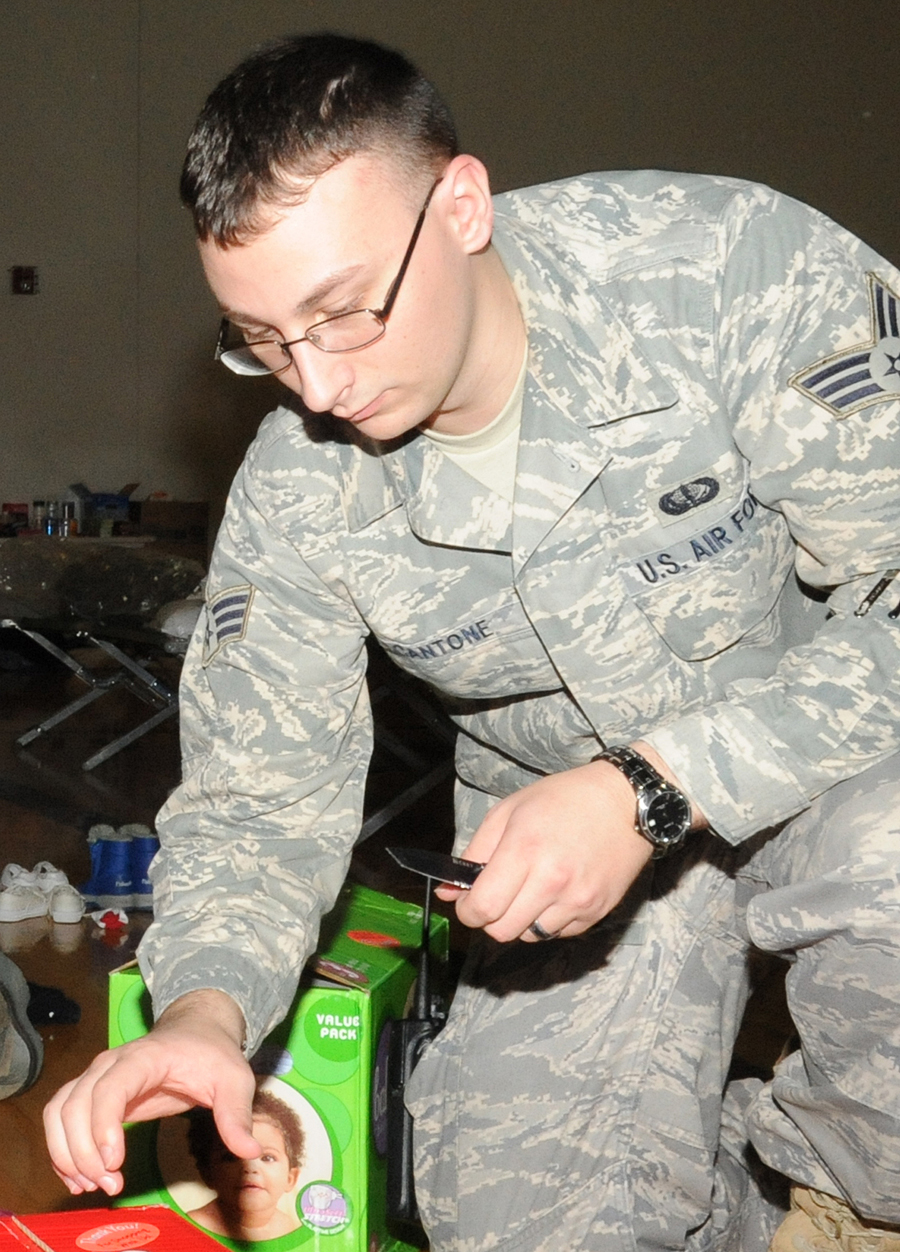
Haiti evacuees at JB MDL

JOINT BASE MCGUIRE-DIX-LAKEHURST, N.J. – Senior Airman Ryan Cantone, 87th Force Support Squadron reservationist, hands out diapers to evacuees with babies at the McGuire Fitness Center Saturday. About 500 evacuees have arrived to the center since early Friday morning, many of them with small children.